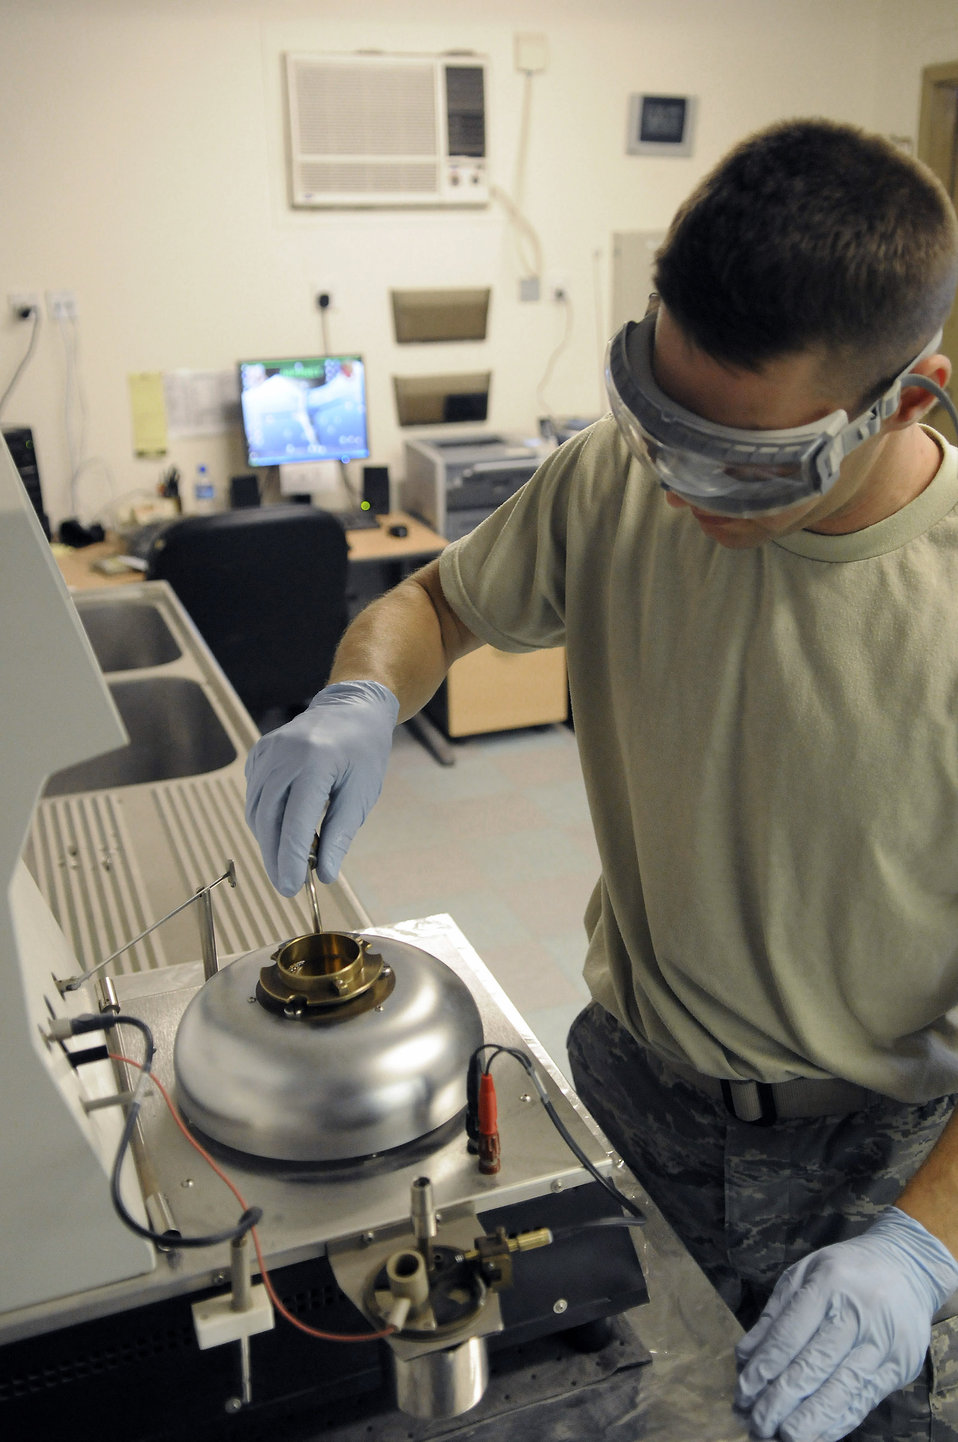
Fuel quality

Staff Sgt. Ronald Gasper prepares a fuel sample, so he can perform a flash point test Dec. 8 at an air base in Southwest Asia. The flash point test is used to determine the temperature at which the fuel will ignite. Sergeant Gasper is a fuels lab technician assigned to the 379th Expeditionary Logistics Readiness Squadron and deployed from Scott Air Force Base, Ill. He is a native of Omaha, Neb.